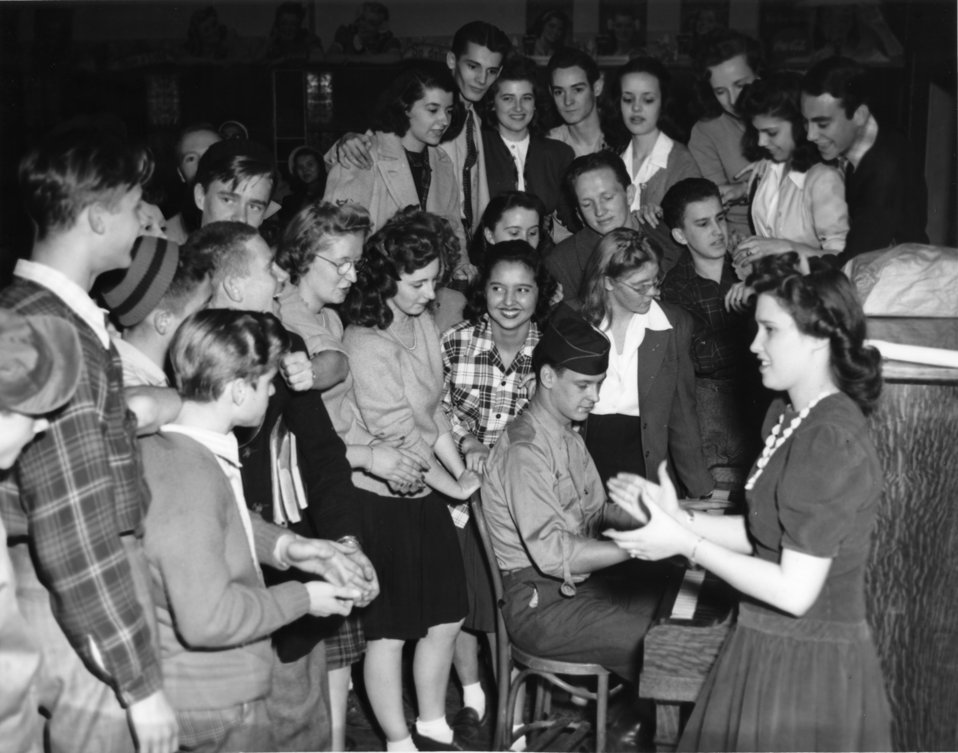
Recreation at Oak Ridge